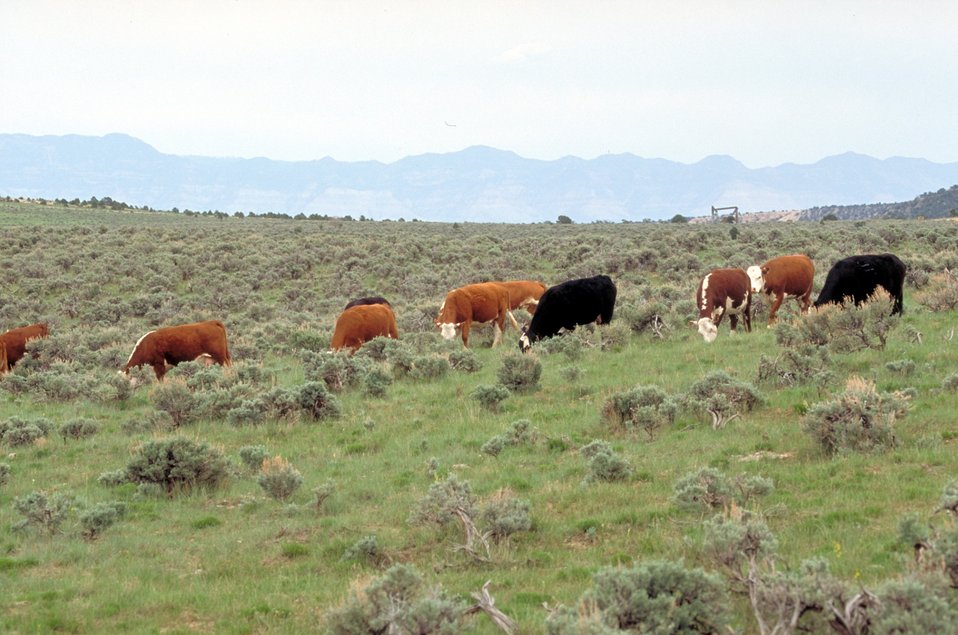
Livestock grazing on BLM lands near Price, Utah.